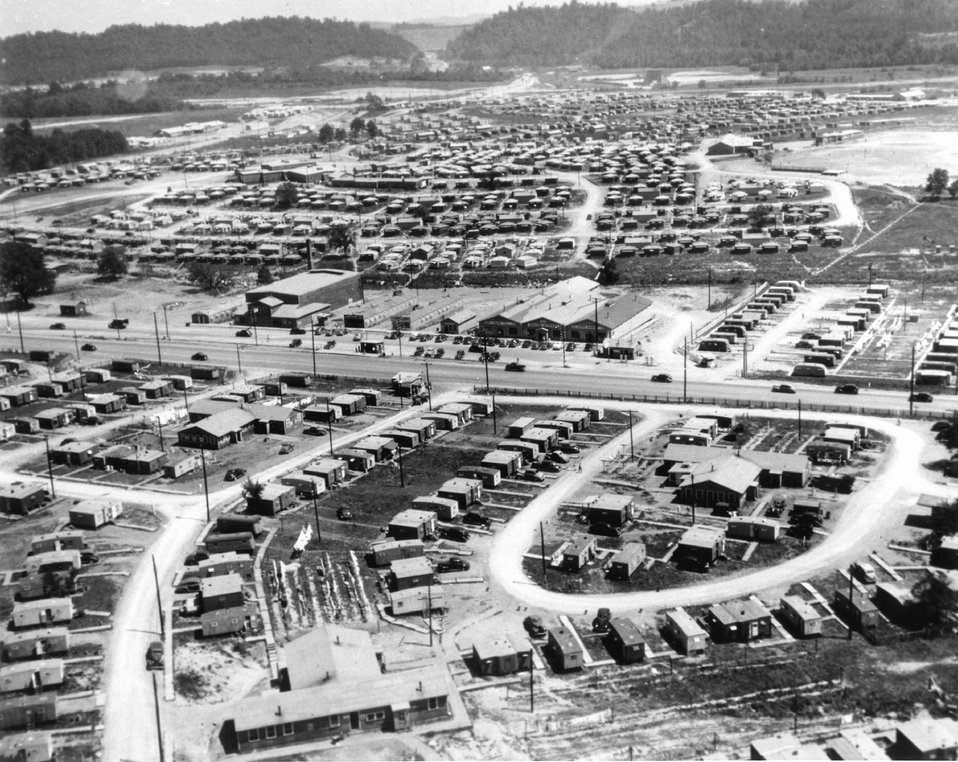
Aerial view of trailer park. c. 1945